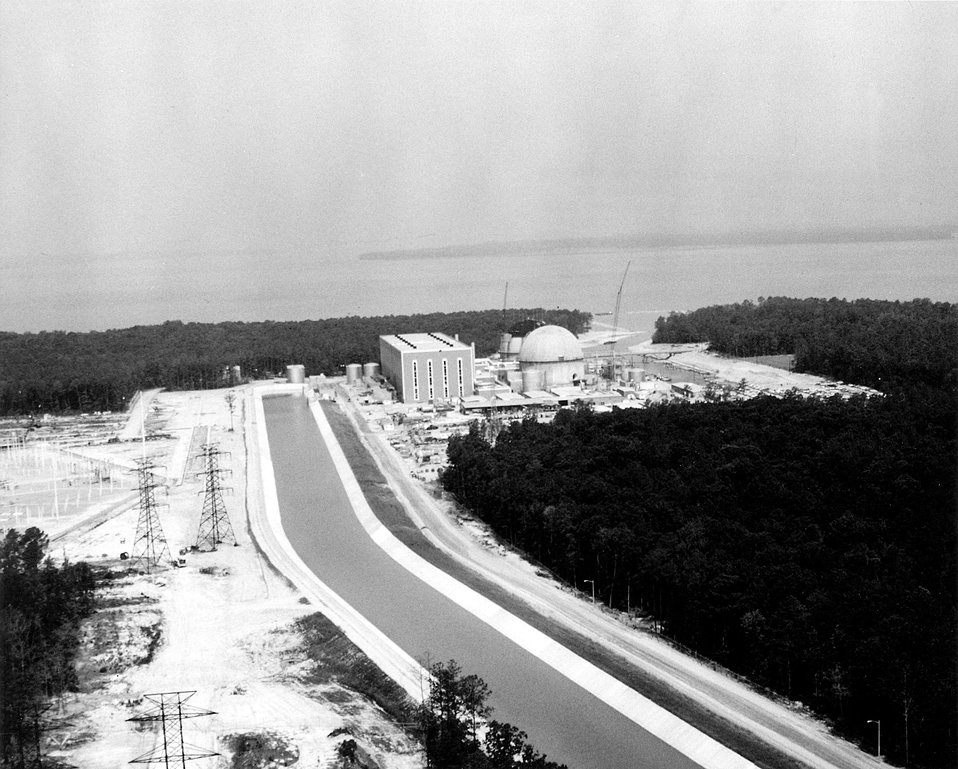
View of Virginia Electric Power Company's Surry Power Station at Surry, Virginia. Circa 1972.